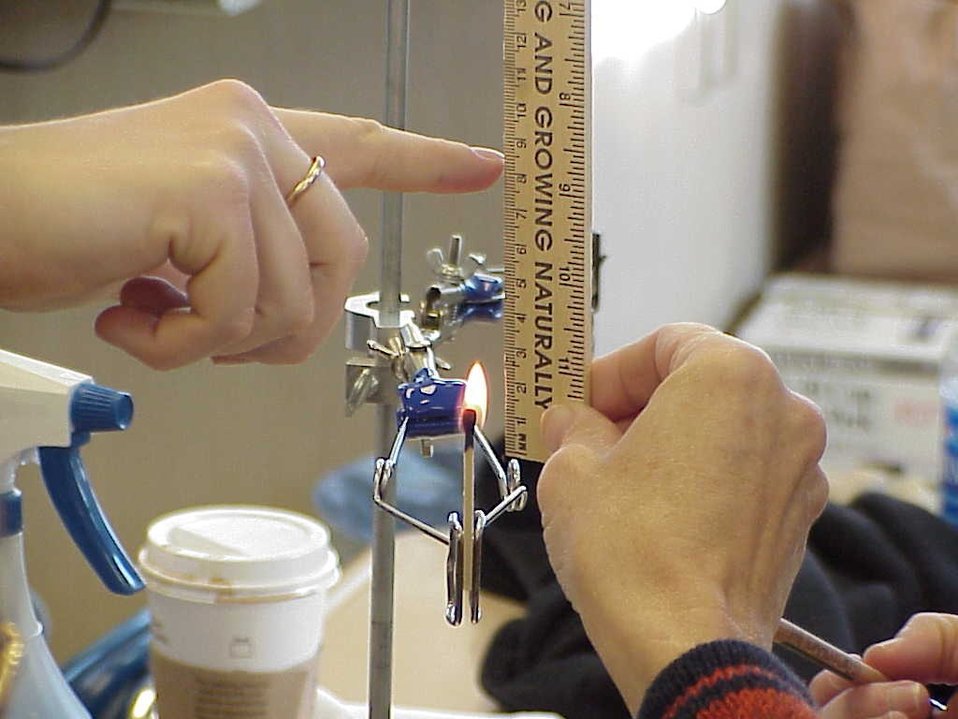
Environmental Education Fire Workshop Timberline High School Fall 2000